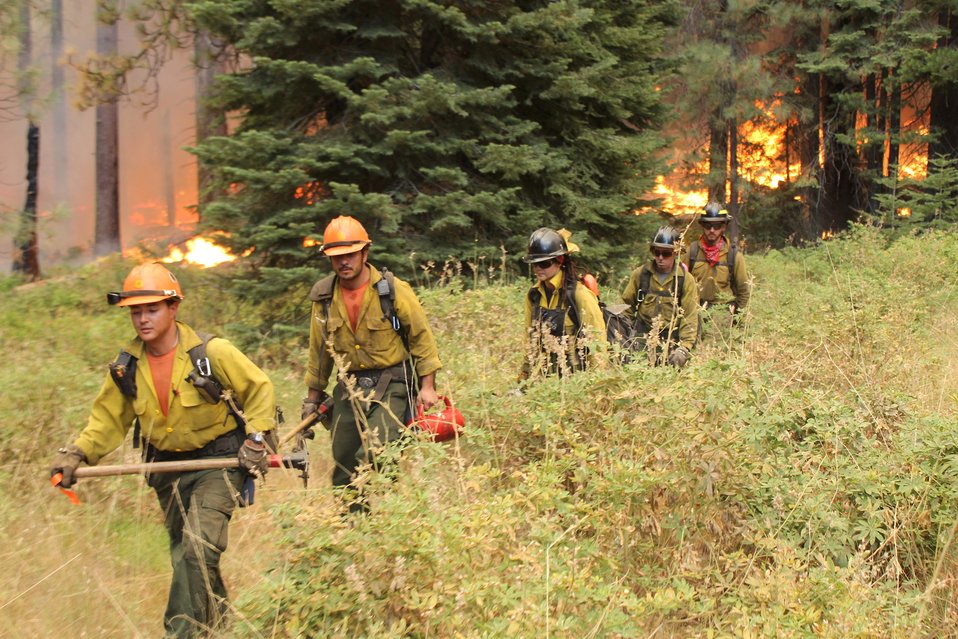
The Horseshoe Meadows Interagency Hotshot Crew (IHC) squad hikes along trail to hold the fire line at the Rim Fire. The Rim Fire in the Stanislaus National Forest near in California began on Aug. 17, 2013 and is under investigation. The fire has consumed approximately 235,841 acres and is 70% contained.